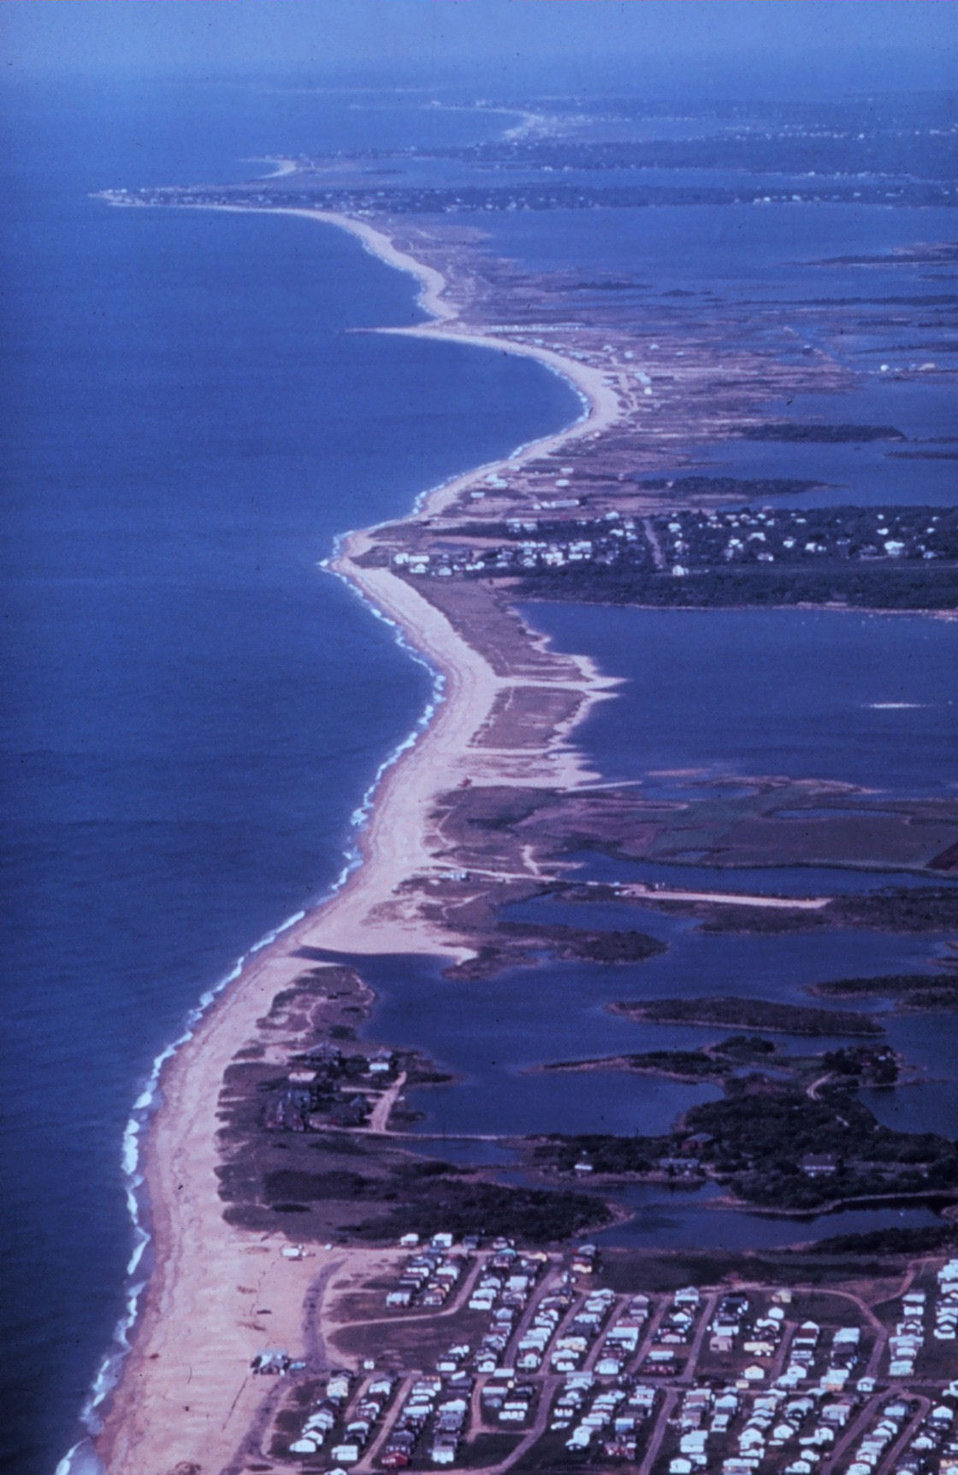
Barrier beaches near Westerly